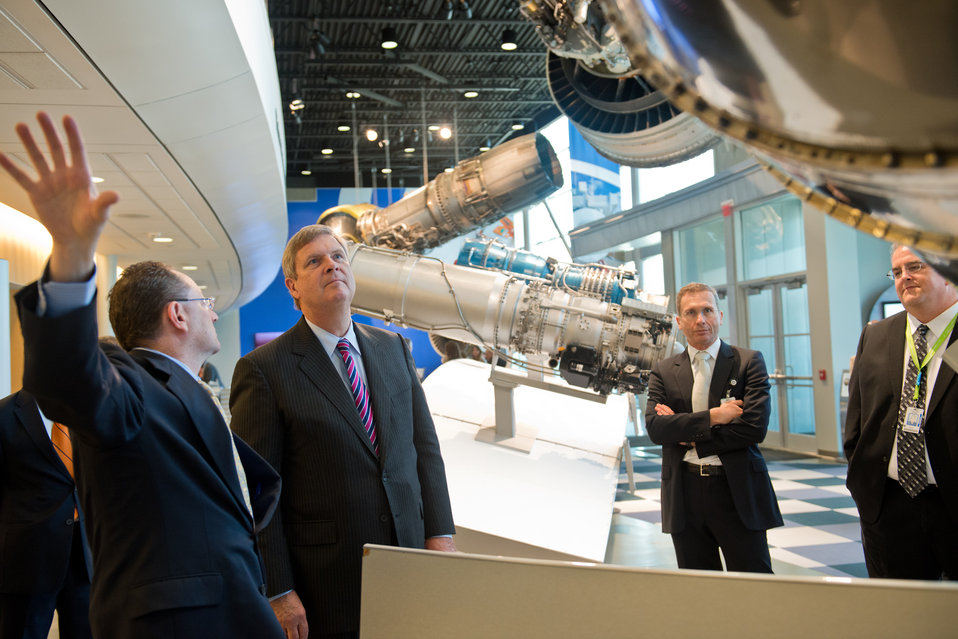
G.E. Aviation Marketing Executive Tom Lodge explains the mechanics of an early-model General Electric jet engine to Agriculture Secretary Tom Vilsack at the company’s Learning Centre in suburban Cincinnati, OH on Wednesday, June 27, 2012. Secretary Vilsack was in Ohio to highlight the U.S. Department of Agriculture’s (USDA) collaboration with the Ohio Aerospace Institute, air carriers and producer groups to develop a Midwest-regional approach to providing renewable jet fuel at G.E. Aviation’s Cincinnati-area facilities.